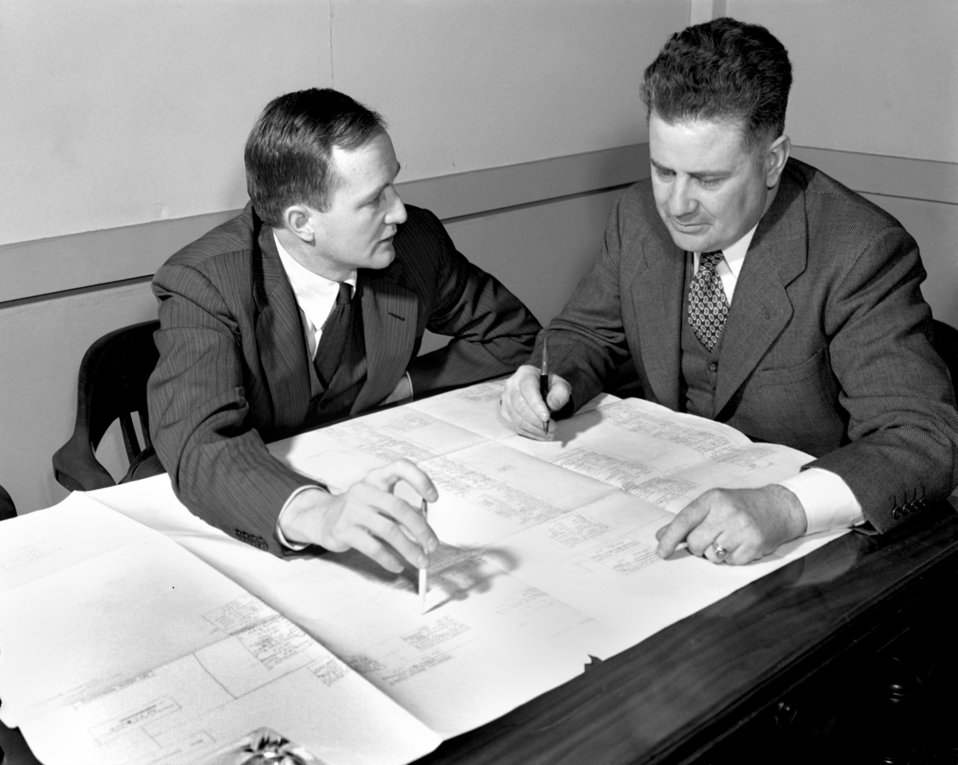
Walter J. Williams and Dr. James B. Fisk Oak Ridge 1947

3317-4 DOE photo Ed Westcott 2-27-1947 Oak Ridge Tennessee